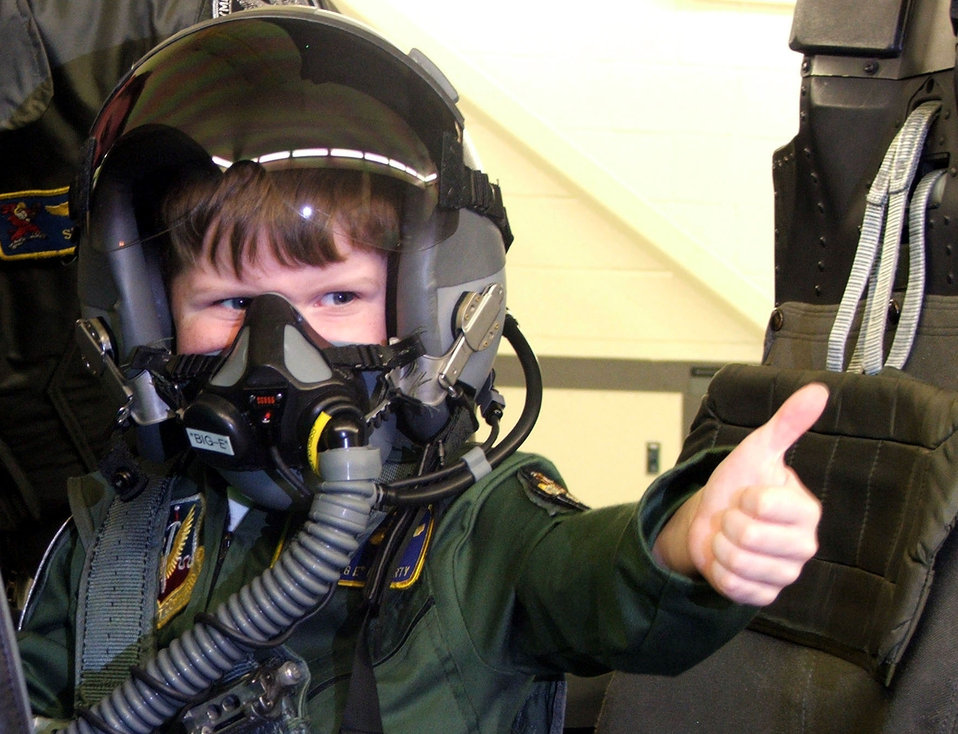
5-year-old cancer survivor plays pilot for a day

SEYMOUR JOHNSON AIR FORCE BASE, N.C. -- Five-year-old Evan Moriarty gives a thumbs up to family and friends during a ride in an F-15E Strike Eagle simulator April 15. Riding in a jet has been a long time wish of the